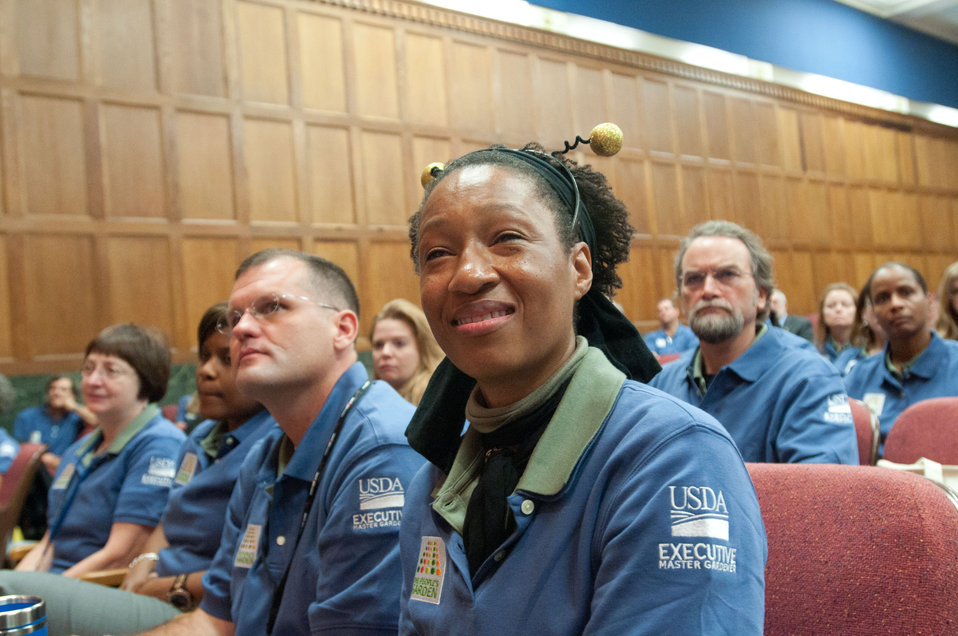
Graduation day of the 2011 U.S. Department of Agriculture (USDA) Executive Master Gardeners, on Tuesday, November 8, 2011 in Washington, DC. During the past six-weeks, students contributed 40-hours of volunteer time, completed studies and testing to receive their certificates today as an Executive Master Gardener. Many of the sessions occurred before work hours, during lunchtime or at community garden project sites such as Powell Middle School. USDA challenges its employees to establish People's Gardens at USDA facilities worldwide or in community gardens. People's Gardens vary in size and type, but all have a common purpose - to help the community and the environment. To learn about the People’s Garden Initiative visit www.usda.gov/wps/portal/usda/usdahome?contentid=peoples g....